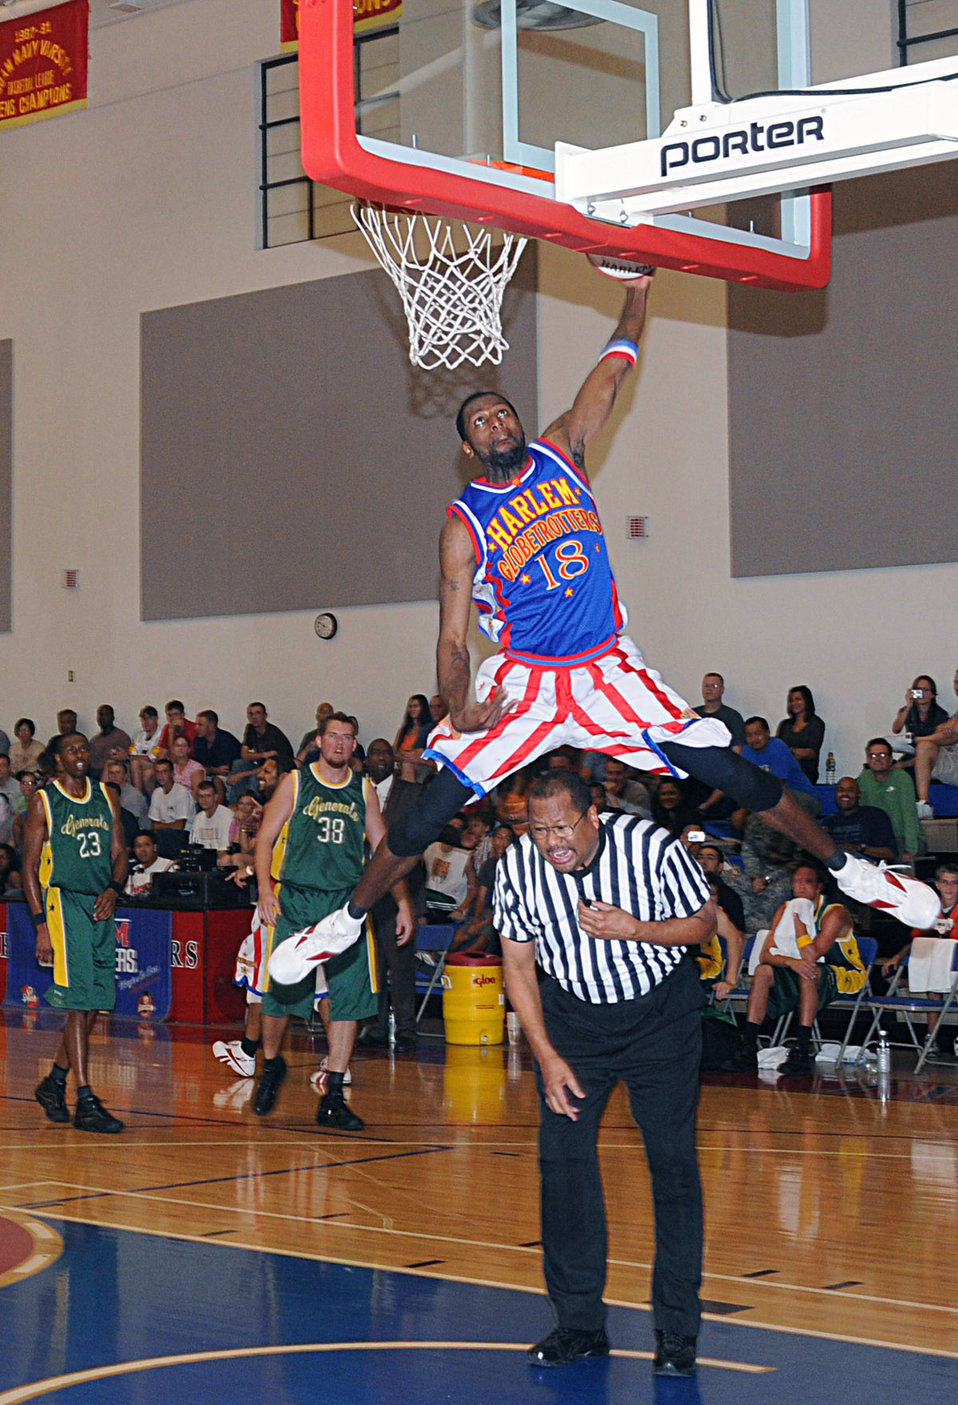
Harlem Globetrotters put on a show at Andersen

Jermaine